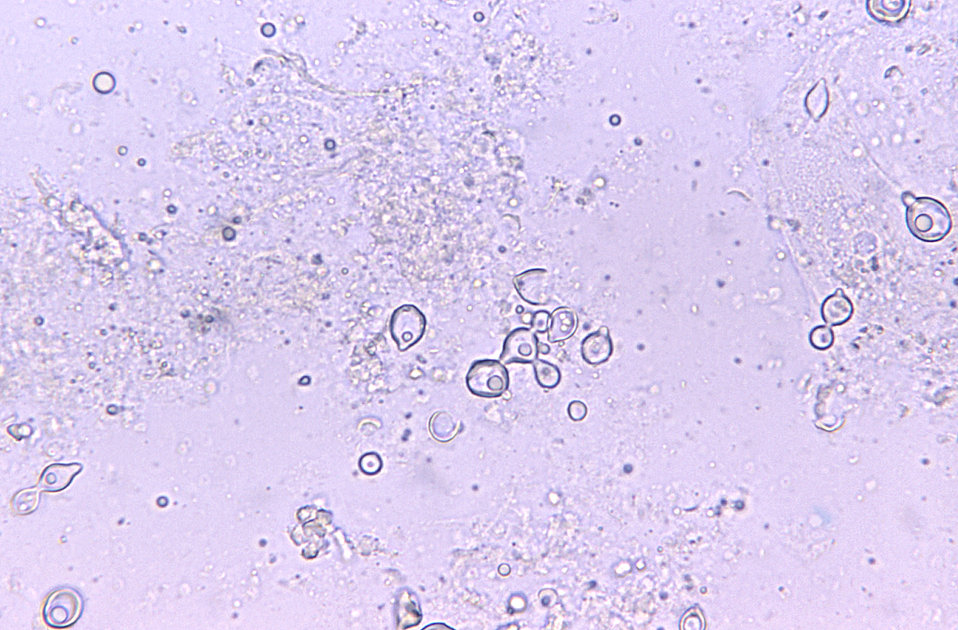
Under a magnification of 500X, this photomicrograph of a Florida dolphin wet-mount tissue sample, revealed some of the histopathologic cytoarchitectural changes associated with what was determined to be a case of lobomycosis due to the fungus, Lacazia loboi, formerly Loboa loboi. Usually, lobomycosis is seen in humans and dolphins.